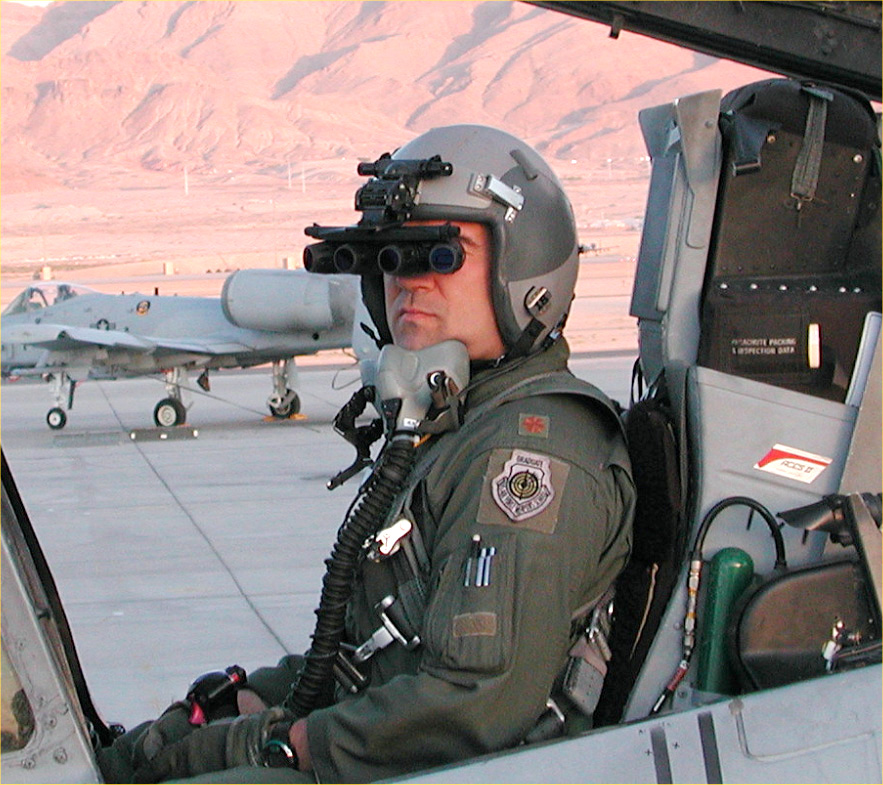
Special operations Airmen receive panoramic night-vision goggles

NELLIS AIR FORCE BASE, Nev. -- A pilot with the 422nd Test and Evaluation Squadron here tests panoramic night-vision goggles on an A-10 Thunderbolt II. The first shipment of PNVGs was received April 25 by special operations Airmen for use by their AC-130 gunship and MC-130 Combat Talon aircrews. A-10 Thunderbolt II aircrews are scheduled to receive the goggles in future procurements.